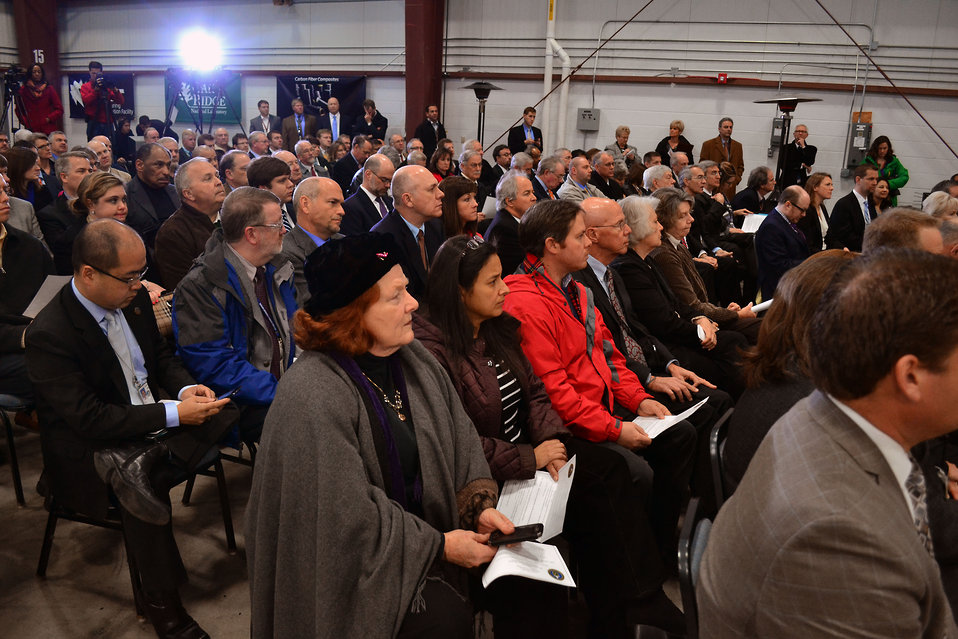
Carbon Fiber Technology Facilty Open House Oak Ridge Tennessee

13-025 DOE photo Lynn Freeny